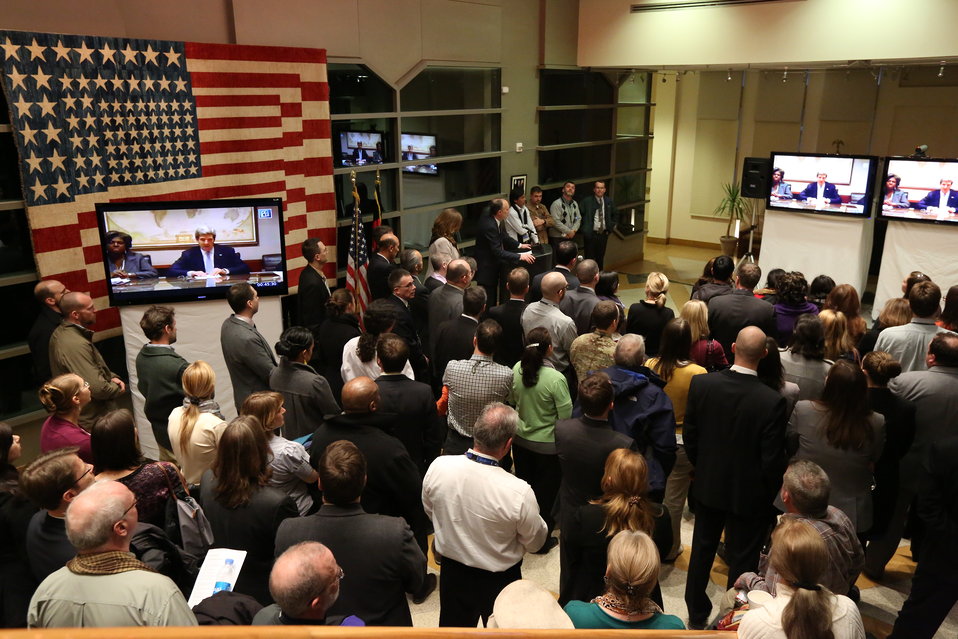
Secretary Kerry Speaks With American Diplomats and Military Personnel at Embassy Kabul

U.S. Secretary of State John Kerry holds a digital video conference with American diplomats and military personnel at the U.S. Embassy in Kabul, Afghanistan, February 6, 2013.